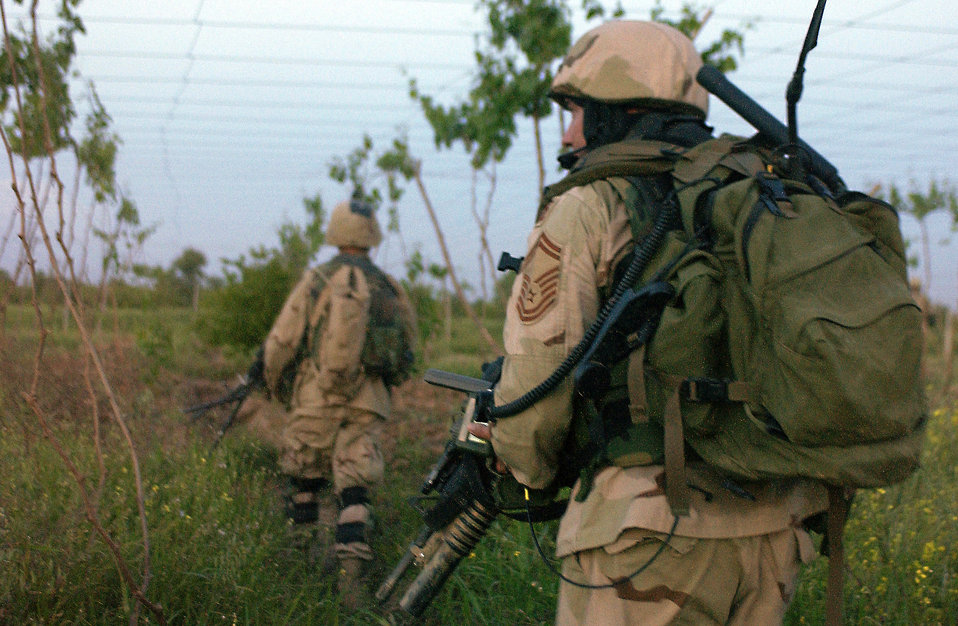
On patrol

BALAD AIR BASE, Iraq -- Senior Master Sgt. Tim Tyvan and a Soldier with the U.S. Army's 1st Infantry Division conduct a patrol here April 11. Sergeant Tyvan is a tactical air patrol party Airman with the 116th Expeditionary Air Support Operations Squadron.